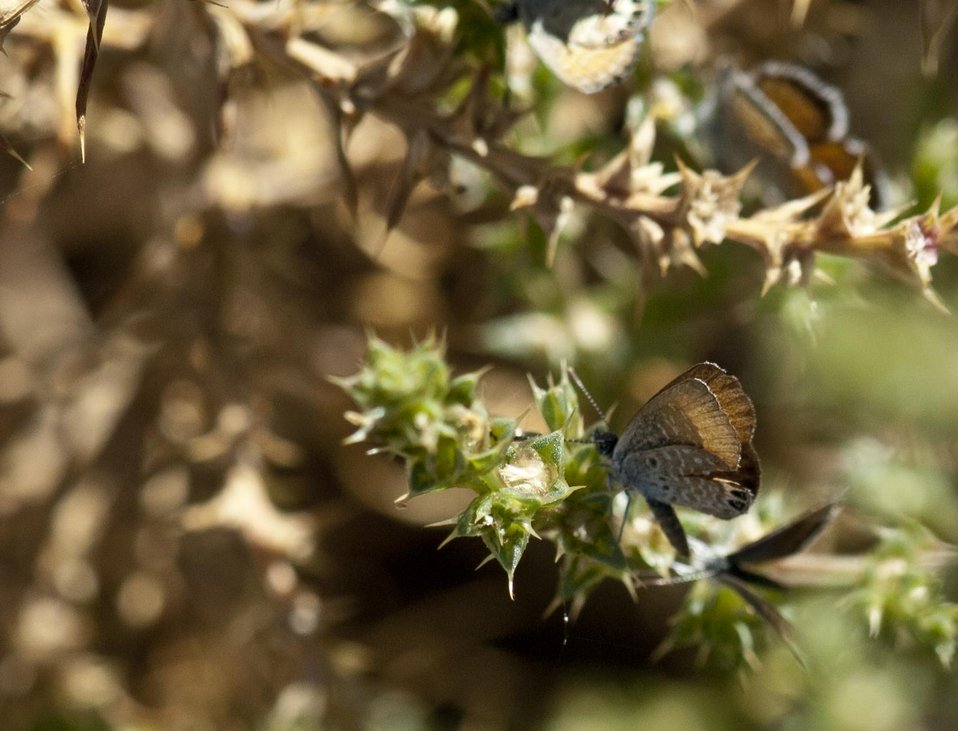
Western Pygmy Blue Butterfly 2